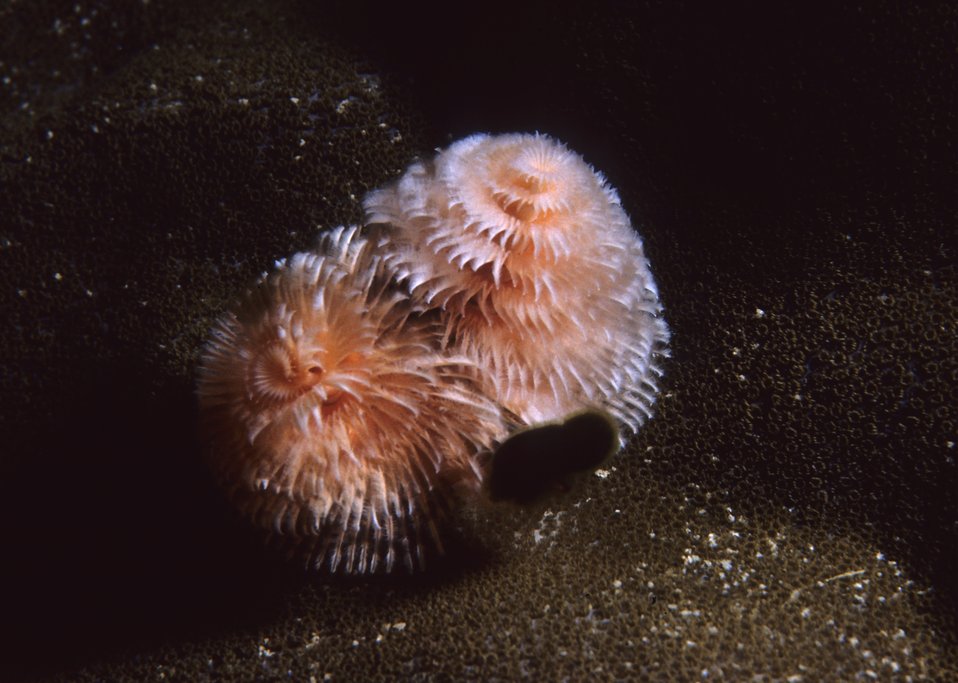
One Tree Reef. Christmas tree worm (Spirobranchus giganteus).